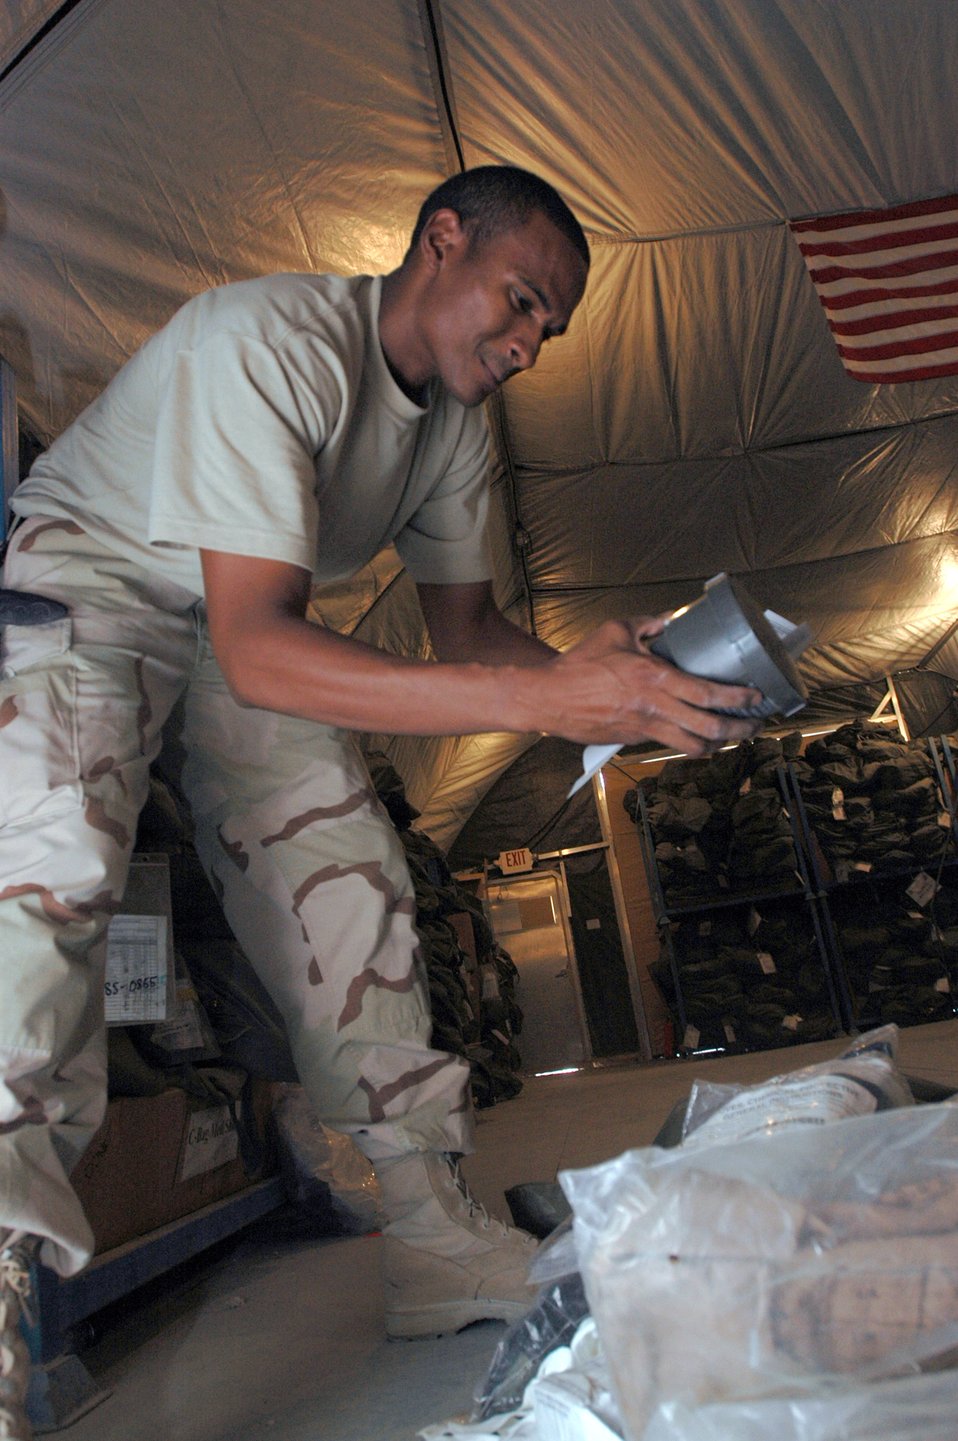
Expeditionary Theater Deployment Center equips transient Airmen

Airman 1st Class Terrence McIntosh verifies that equipment in his C bag matches its inventory sheet Sept. 1 at a forward deployed location in Southwest Asia. Airman McIntosh is deployed from Royal Air Force Lakenheath, England, and is a native of Dade County, Fla.